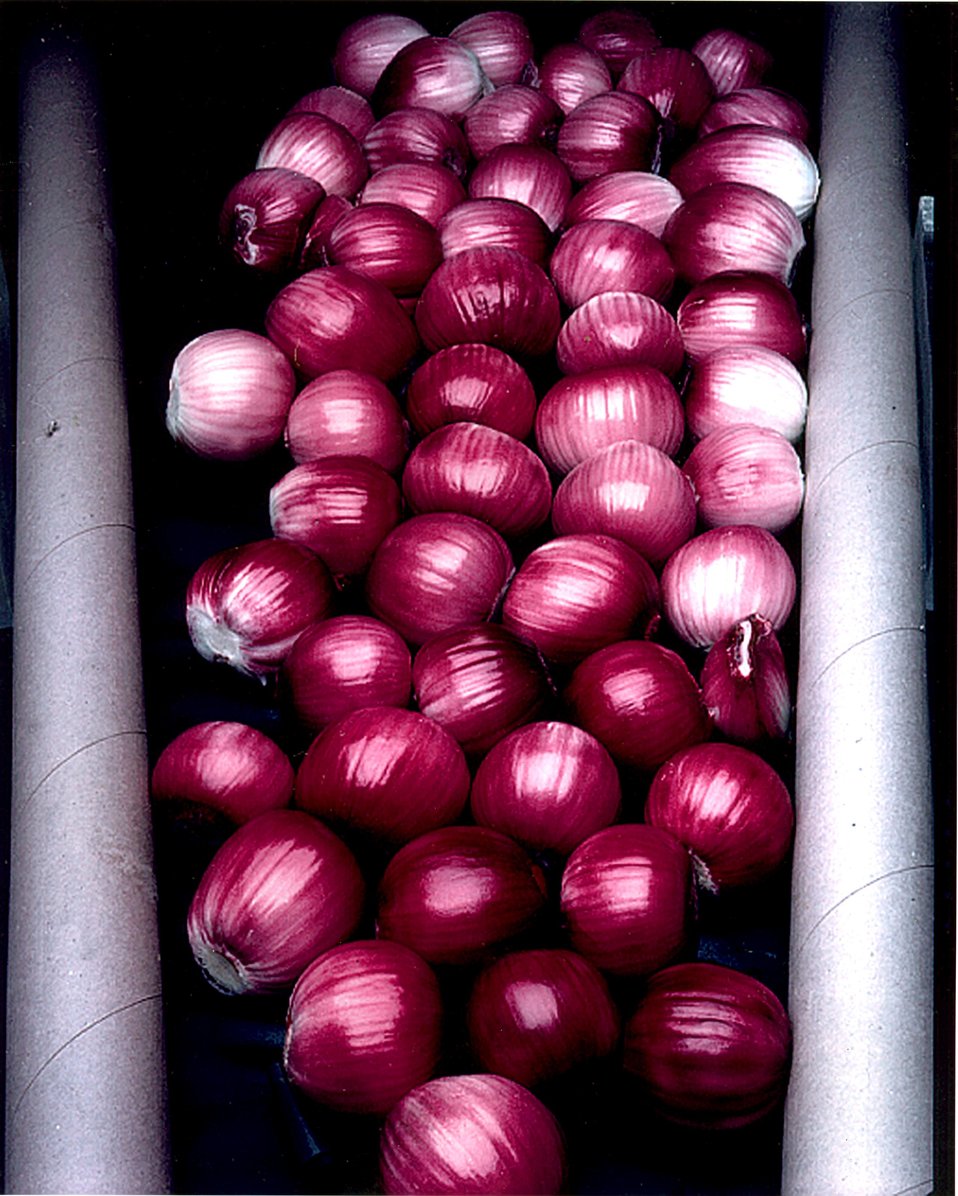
ONIONS SHOWN ARE IRRADIATED.

FOOD IRRADIATION IS AN FDA APPROVED TECHNOLOGY THAT CAN BE USED TO CONTROL INSECTS IN FRUIT AND VEGETABLES, EXTEND THE SHELF LIFE OF FRESH PRODUCE, AND CONTROL PATHOGENIC ORGANISMS IN PRODUCTS SUCH AS POULTRY AND RED MEAT. PNNL HAS AN EXTENSIVE BASE OF EXPERIENCE IN FOOD IRRADIATION INCLUDING PRODUCT TESTING, ENVIRONMENTAL ASSESSMENT, FACILITY DESIGN, OPERATION, ECONOMIC ASSESSMENT.